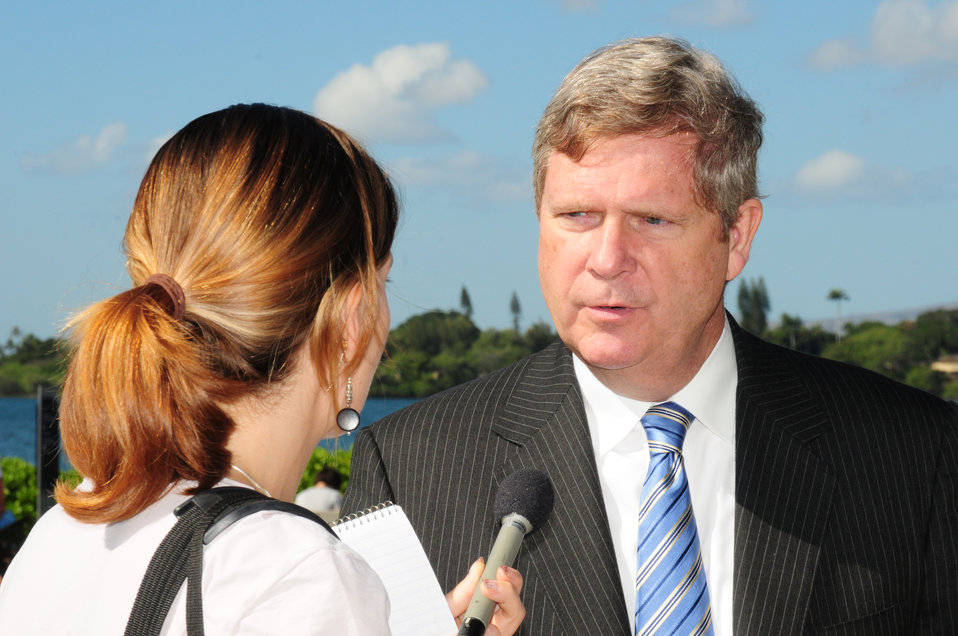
Agriculture Secretary Tom Vilsack is interviewed by Hawaii Public Radio Reporter Nikki Motson following Vilsack's talk at the World War II Valor in the Pacific National Monument's Pearl Harbor Visitor Center where he highlighted the Obama Administration's commitment to renewable energy. Pearl Harbor naval base was the first Hawaii military marine fleet to use biodiesel, replacing the Department of Navy-operated tour boats that shuttled visitors to and from the USS Arizona Memorial with five new boats capable of running on 100% biodiesel. Near Honolulu, HI, on Tuesday, January 10, 2012.